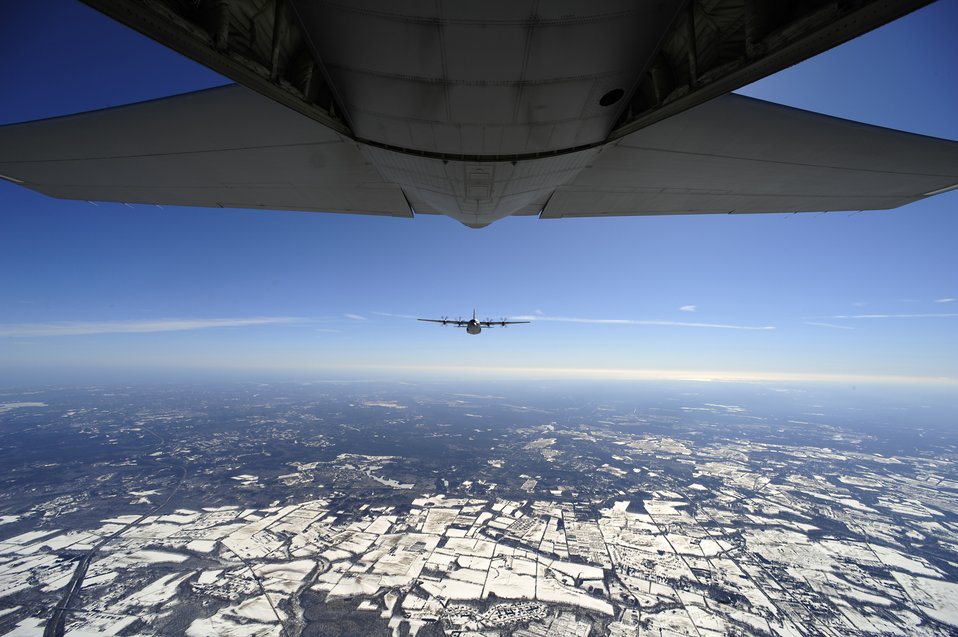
Staying close

Two EC-130J Commando Solo aircraft fly in formation during a training sortie Feb. 11, 2011, above Harrisburg, Pa.